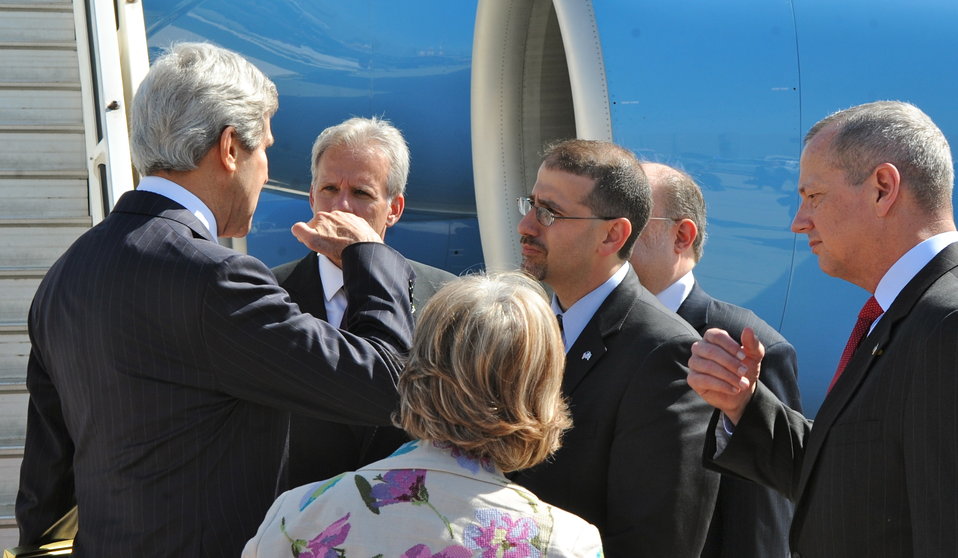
Secretary Kerry Arrives in Tel Aviv

U.S. Secretary of State John Kerry chats with, from left, Isaeli Ambassador to the U.S. Michael Oren; U.S. Ambassador to Israel Daniel Shapiro; and retired Army General John Allen after arriving at Ben Gurion International Airport in Tel Aviv, Israel, on May 23, 2013.